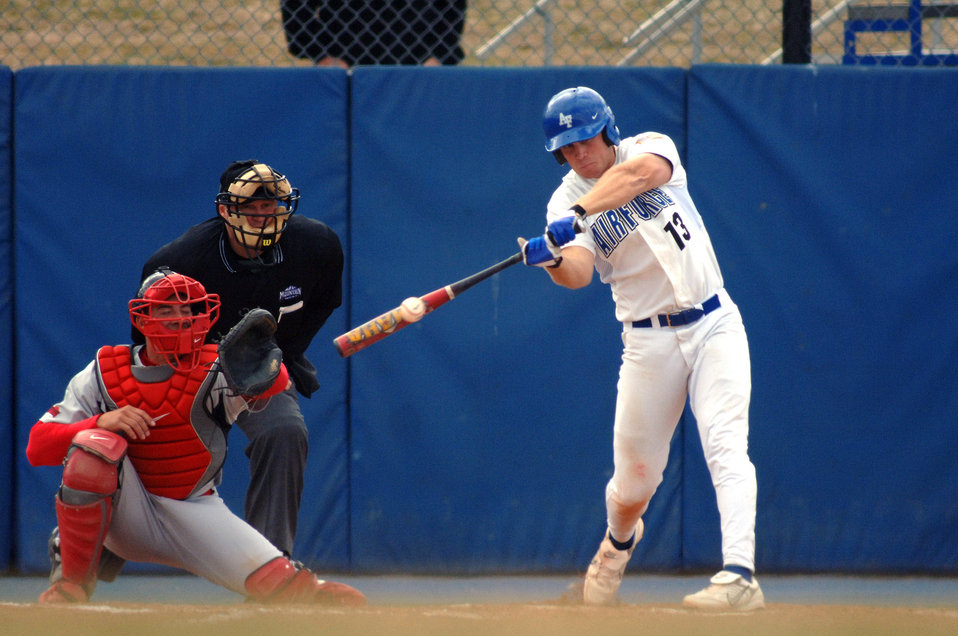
Karl Bolt selected by Phillies in 15th round of MLB draft

Karl Bolt, then a senior cadet at the U.S. Air Force Academy, connects on the first of his two home runs during a game March 22 against San Diego State. Recently graduated from the academy, Bolt was selected by the Philadelphia Phillies in the 15th round of the 2007 Major League Baseball Amateur Draft June 8.